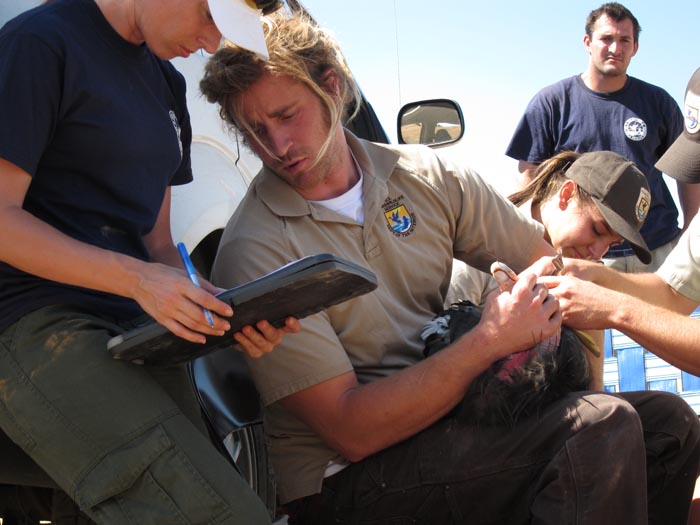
FWS biologist Joseph Brandt gauges the health of a condor

Located 80 miles north of Los Angeles, CA, Bitter Creek National WIldlife Refuge was established to provide safe roosting and foraging habitat for use by California condors.

California Condors are now flying back and forth from Ventura Country and Bitter Creek NWR. The refuge is also used as a release site for California Condors. A large flight pen is housed at the refuge it is used to hold California Condors that are injured or getting ready to be released in to the wild. (D.C. Carr/USFWS photo)